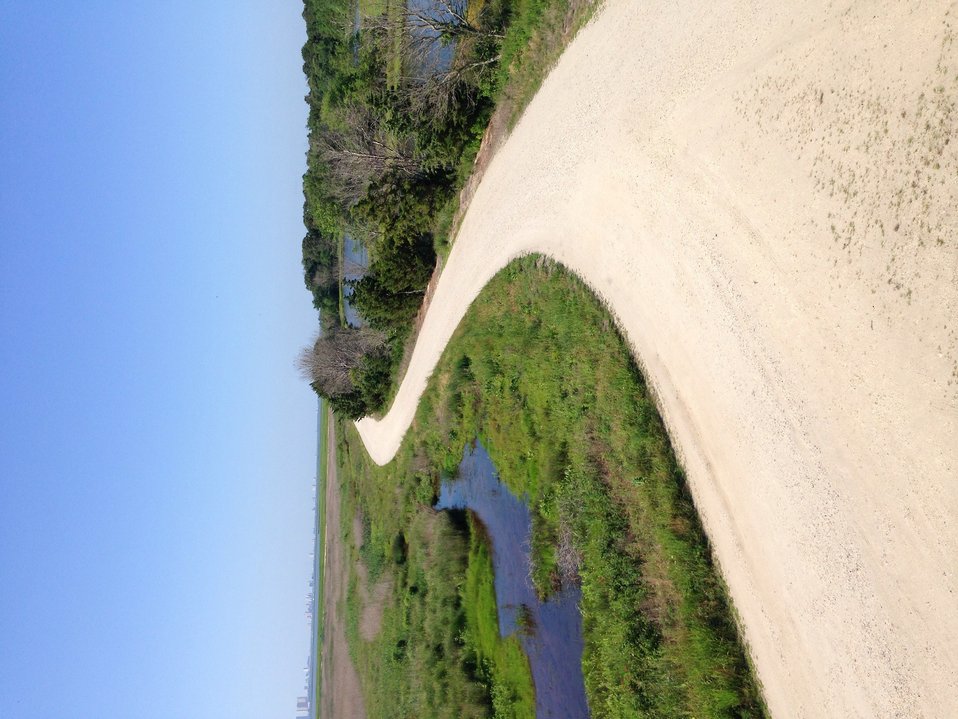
Forsythe wildlife drive after hurricane repairs

View from Gull Pond Tower looking south.